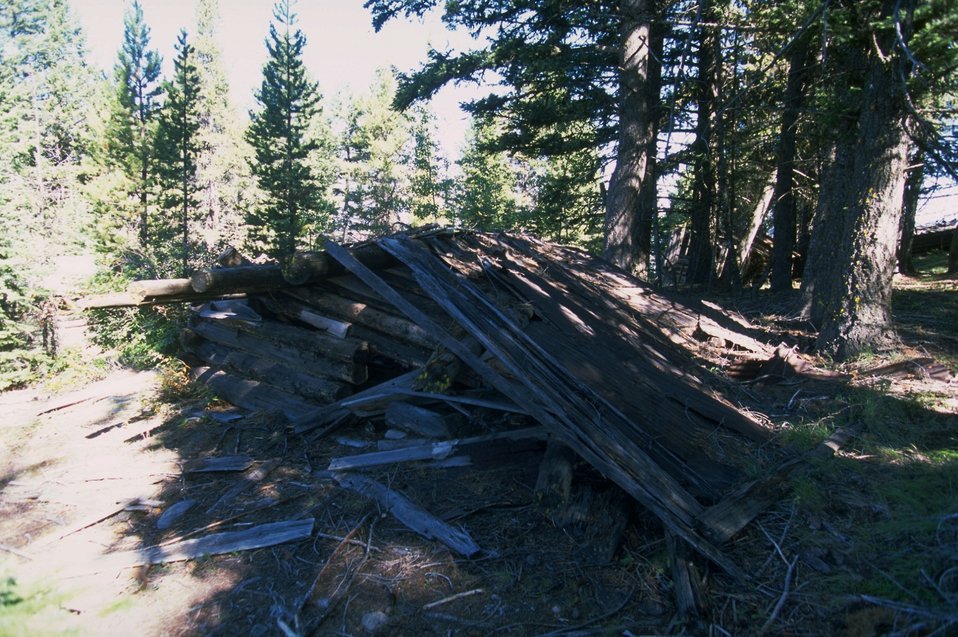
Historic cabin in Coloma Ghost Town